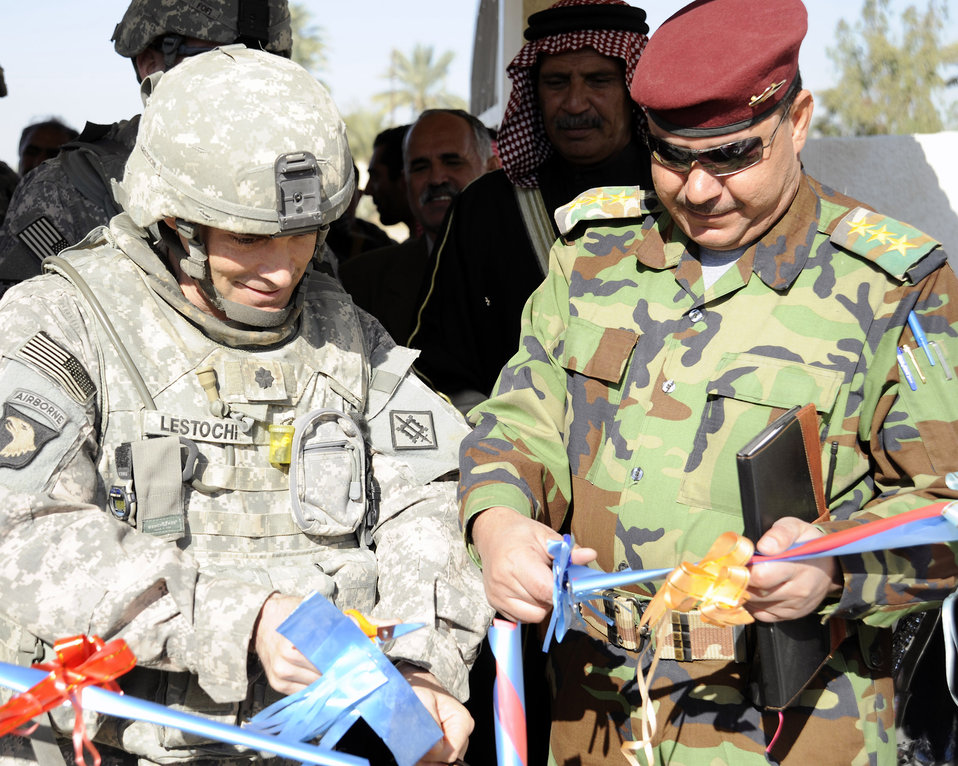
RED HORSE Airmen close chapter with Iraqis

U.S. Army Lt. Col. Christopher Lestochi (left) and a senior Iraq army officer cut the ceremonial ribbon for the opening of the community center Dec. 5 in Hawr Rajab, Iraq. Colonel Lestochi is the commander 54th Engineer Battalion.